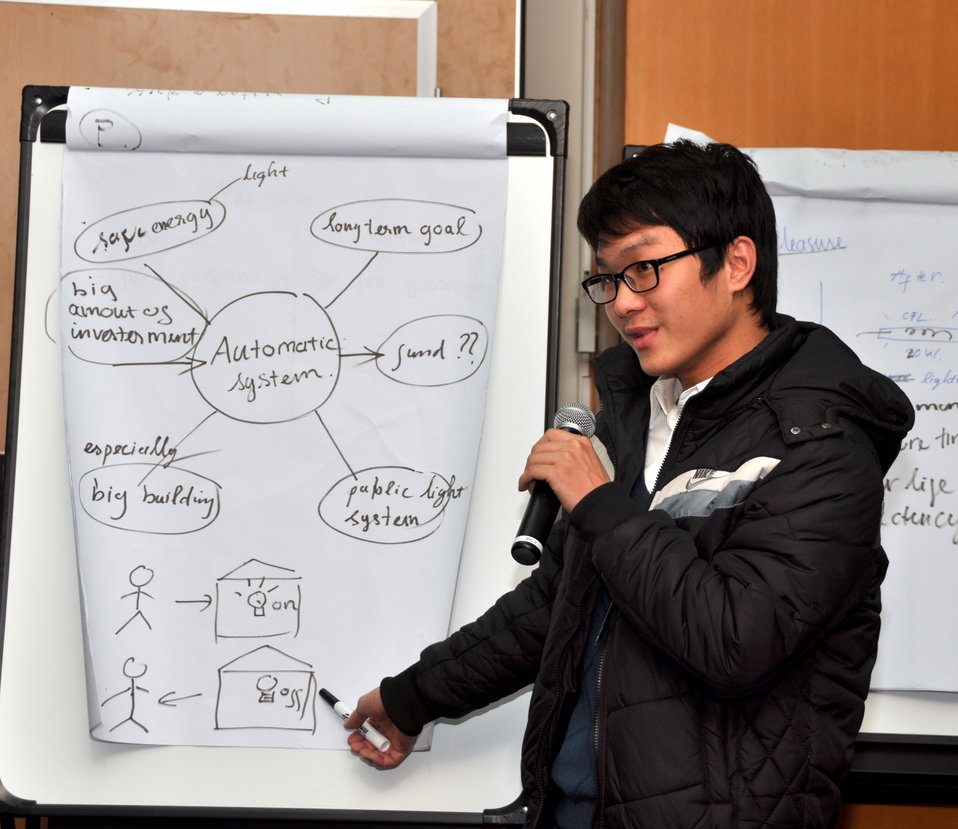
Speaker program on Climate Change and Clean Energy at the American Center

Hanoi, January 16, 2013